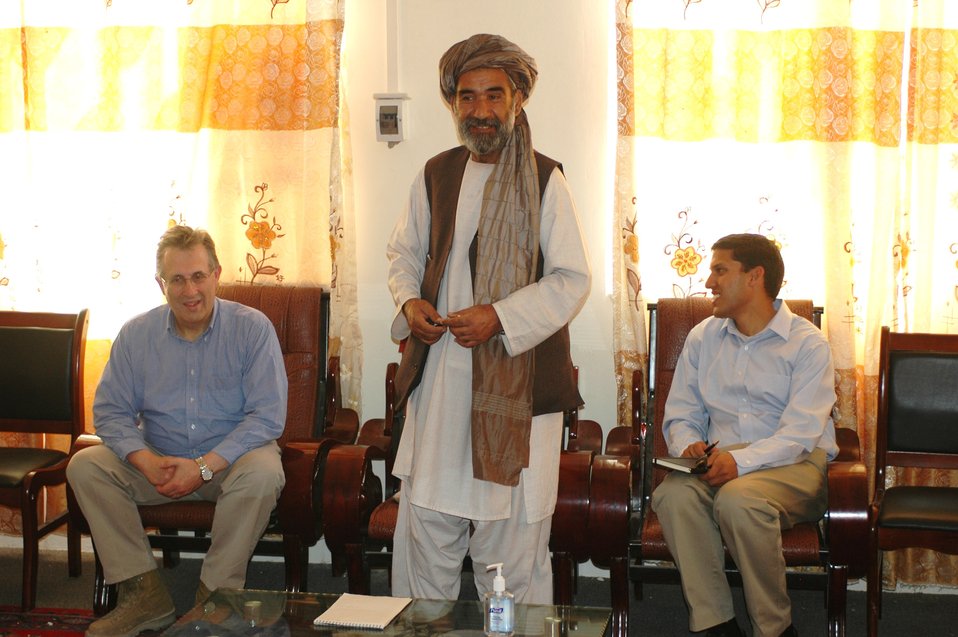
Dr Shah Visits Argandab April 10, 2010